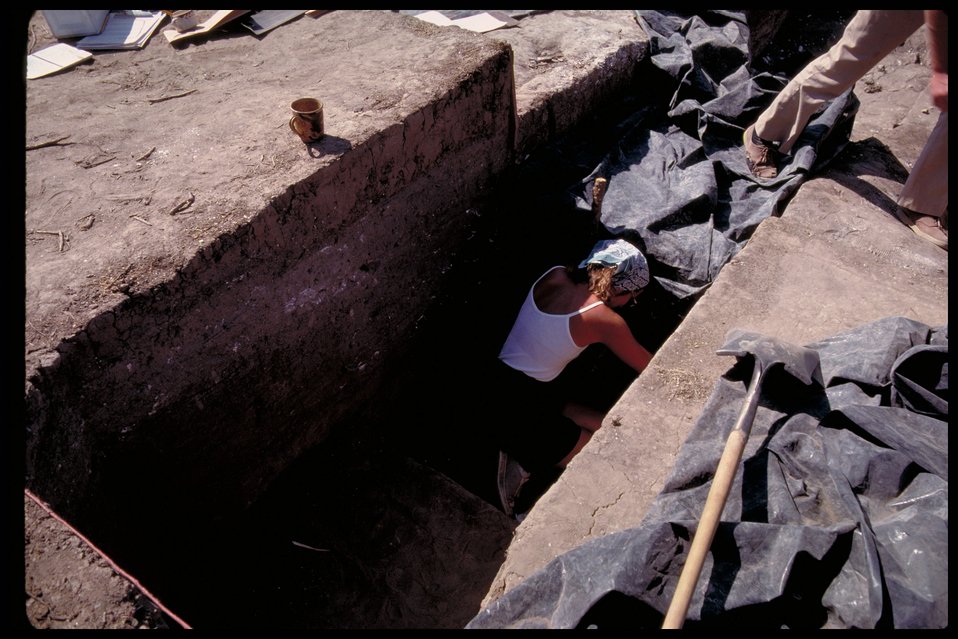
Archeological Site Near Givens Hot Springs Lower Snake River District Owyhee Field Office